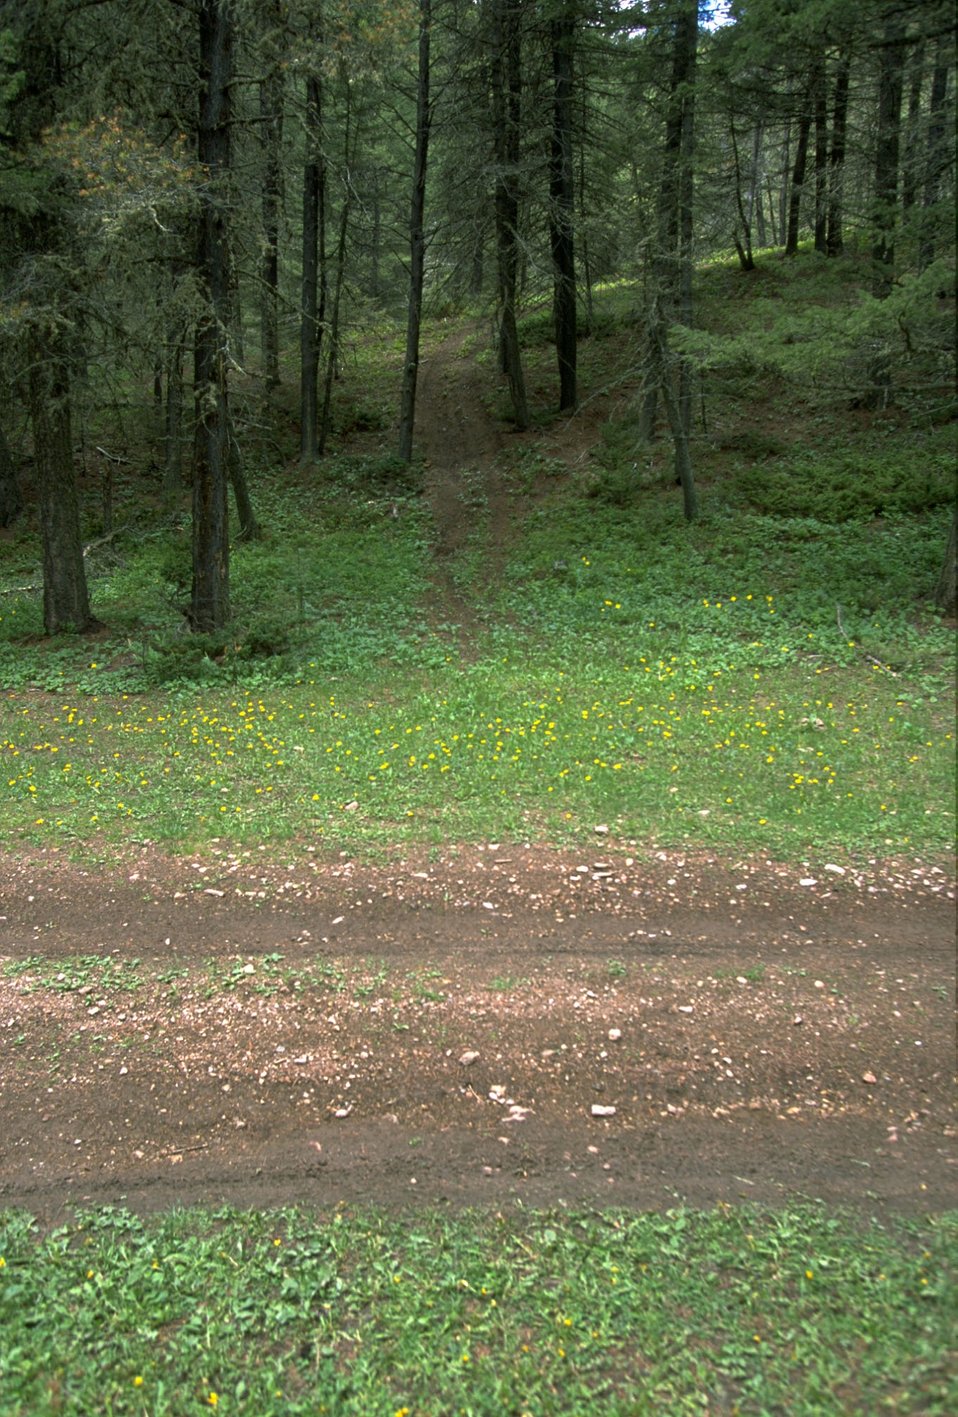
ORV Road in LimeKiln Canyon in the Judith Mountains